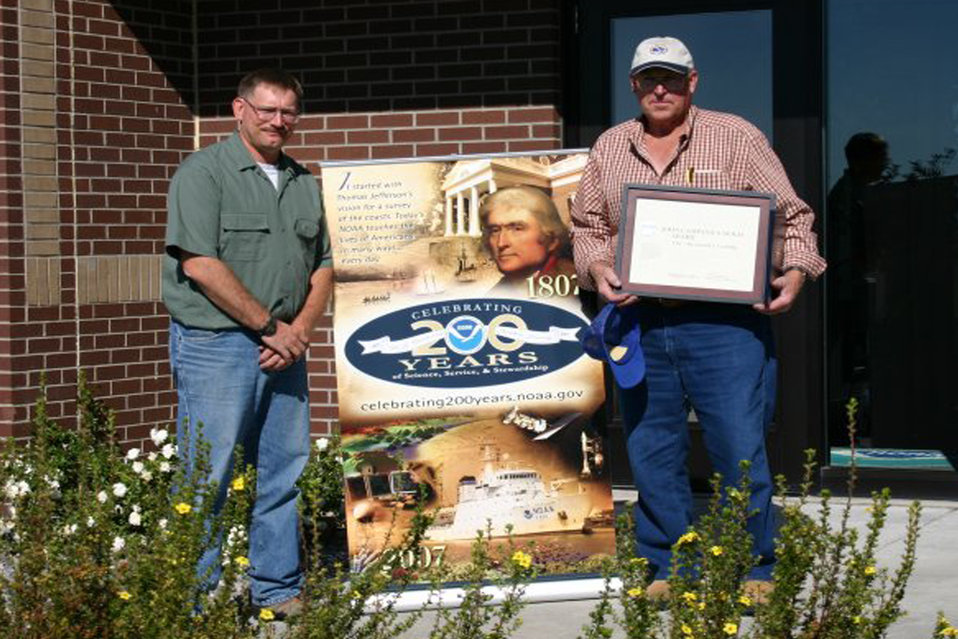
Cooperative Weather Observer Mr. Joe Alexander of Burris, Wyoming (right) recently received the prestigious John Campanius Holm Award on behalf of his family from Data Acquisition Program Manager Ralph Estell of NOAA's National Weather Service in Riverton, Wyoming. The Alexander family has provided quality weather observations since 1962.